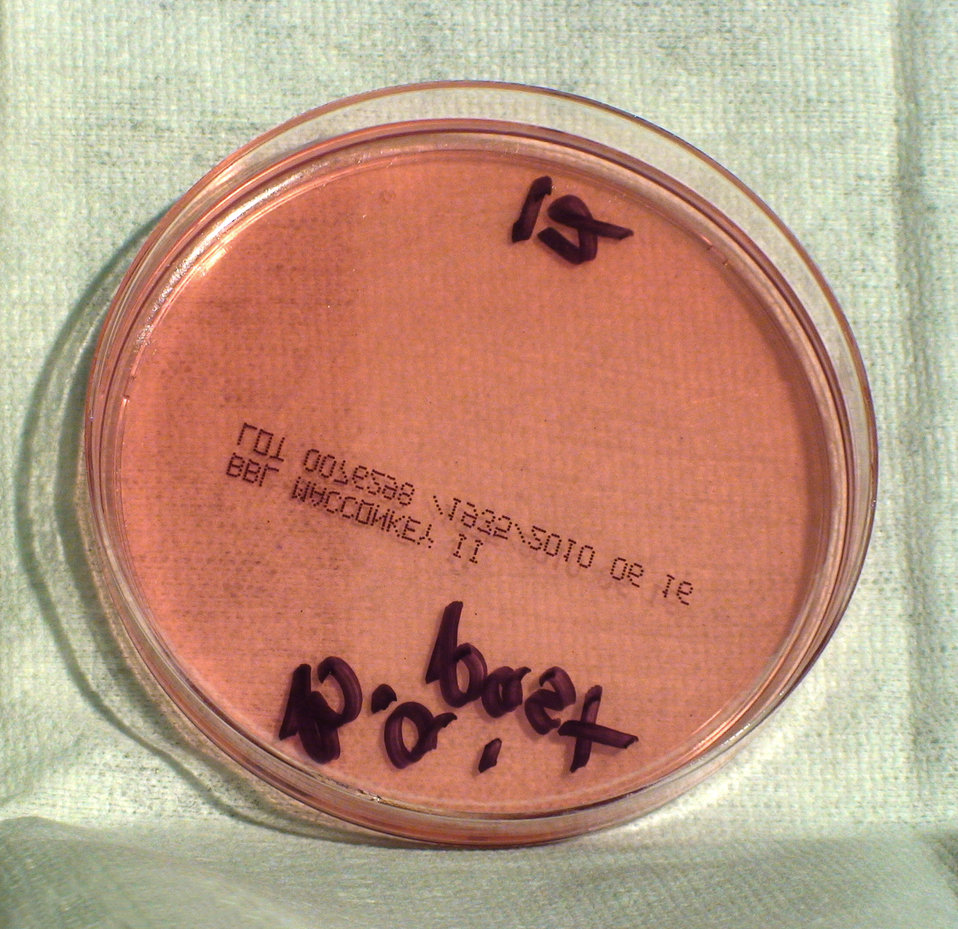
This photograph depicts light colonial growth displayed by Gram-positive, Pasteur strain, Bacillus anthracis bacteria, which was grown on a medium of MacConkey agar, for a 24 hour time period, at a temperature of 37�C. See PHIL 12391 for a closer view of these bacterial colonies. B. anthrax is the bacterial pathogen, which causes the disease known as anthrax.